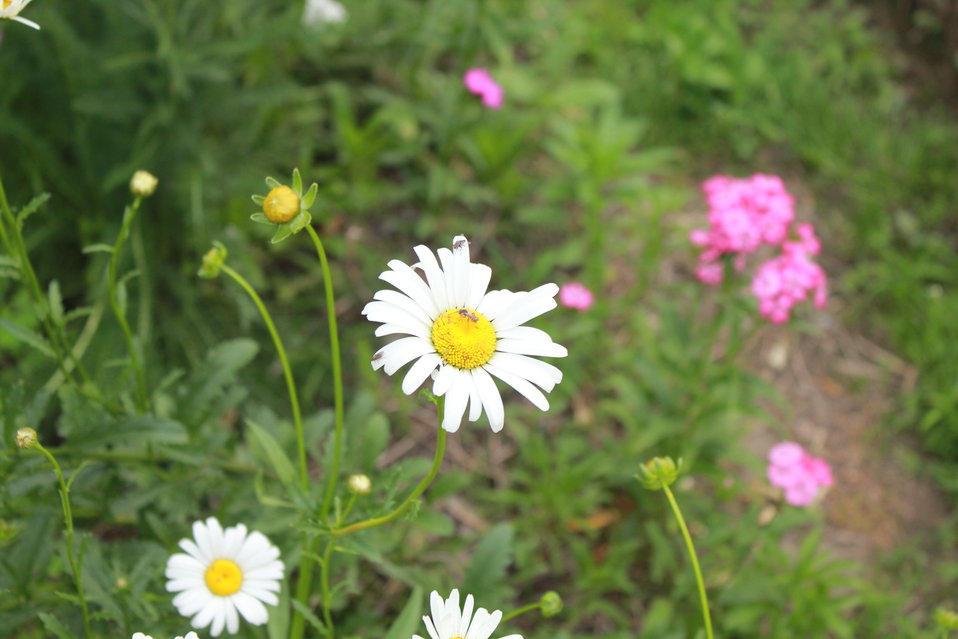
Pollinators in Hadley, MA.